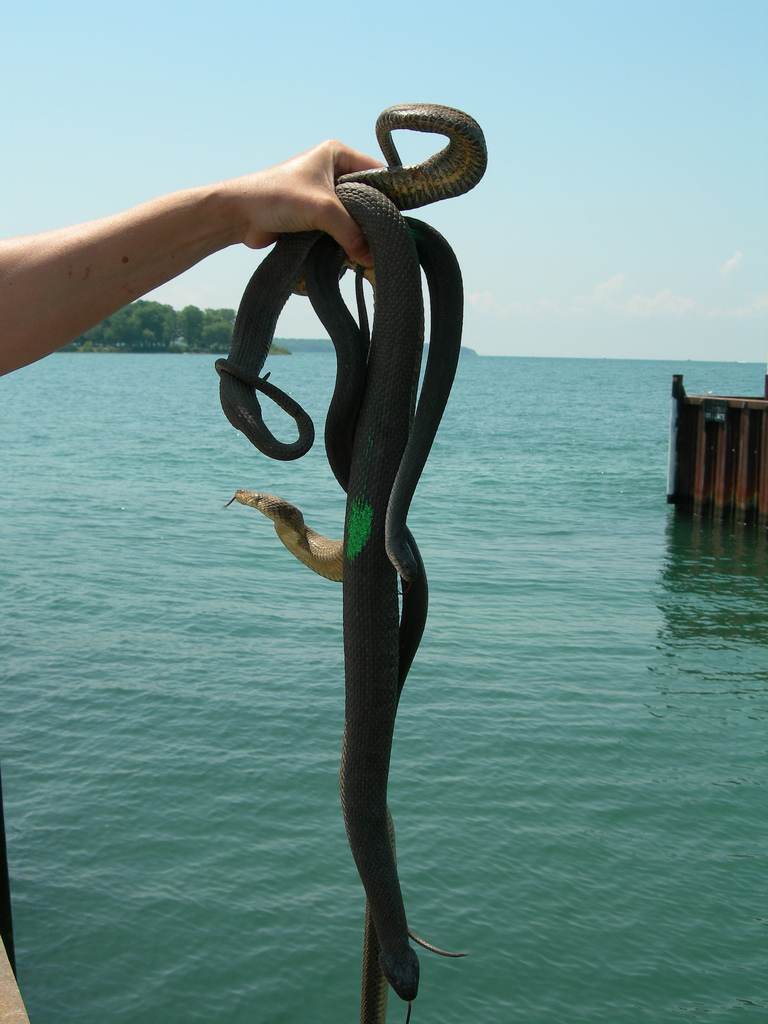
Recovered Lake Erie watersnake (Nerodia sipedon insularum)